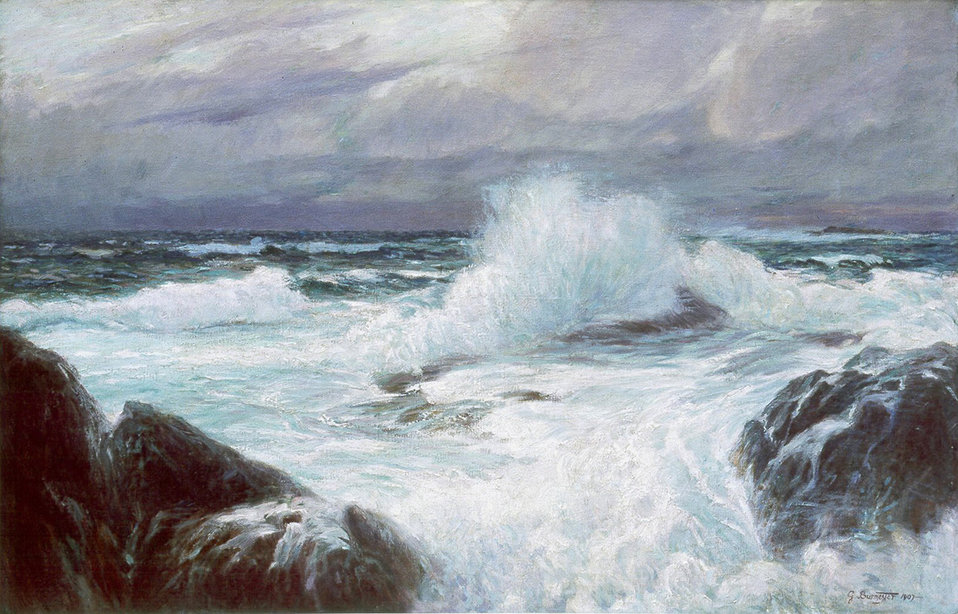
Georg Burmester - Brandung in Norwegen 1907